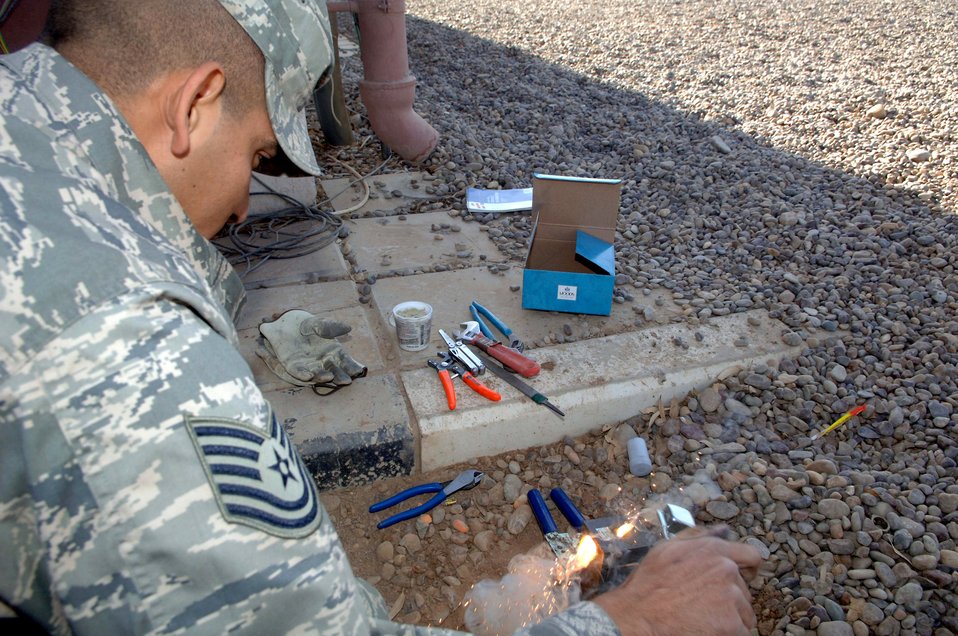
Let there be fire

Tech. Sgt. Victor Magana ignites exothermic welding powder Dec. 11 to fuse ground wires at Balad Air Base, Iraq. The wires will prevent static electricity from damaging nearby communication lines. As an electrician, Sergeant Magana is responsible for installing and maintaining all interior and exterior electrical systems and distribution networks on base. Sergeant Magana is assigned to the 332nd Expeditionary Civil Engineer Squadron and is deployed from Barksdale Air Force Base, La.